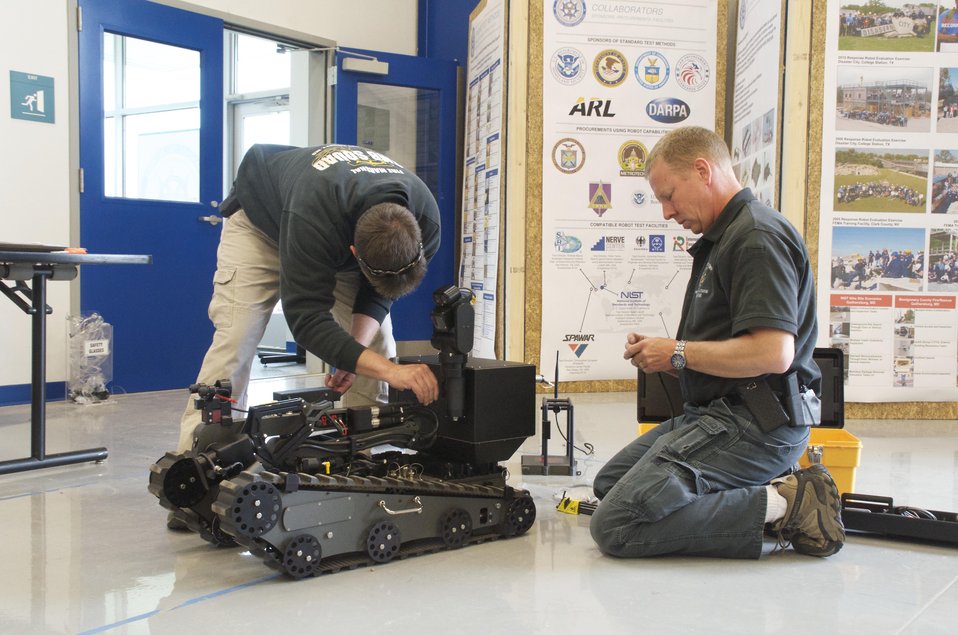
Bomb Squad Members

Members of the Bomb Squad make adjustments to one of the robots on the Robot Test Facility floor.

Development of test methods at the NIST Robot Test Facility is funded in part by the NIST Office of Law Enforcement Standard's Counterterrorism and Response Technologies program.